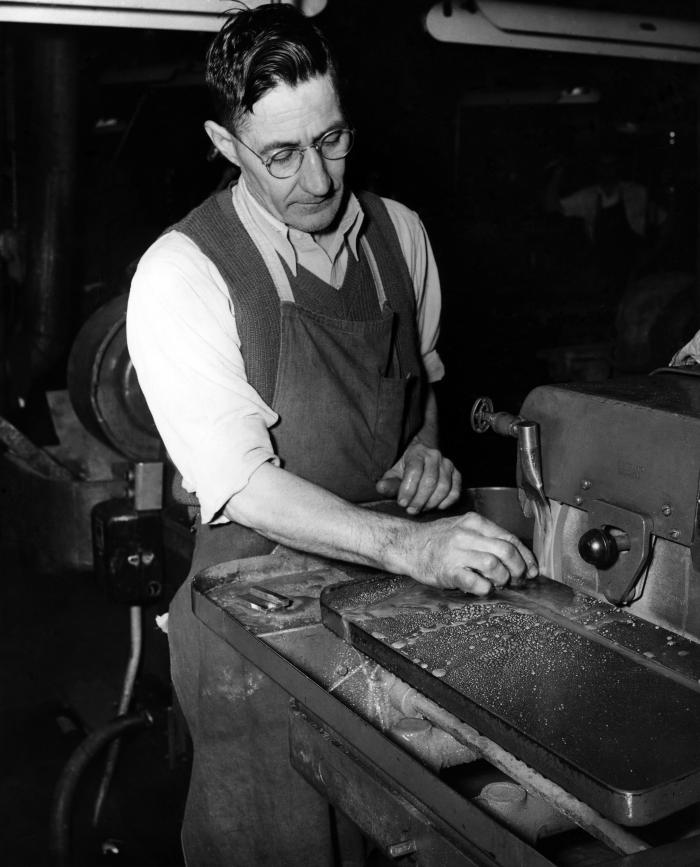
This 1946 historical photograph was provided by the Center for Disease Control's (CDC), National Institute for Occupational Safety and Health (NIOSH). It depicted a worker at a Carboloy� plant. Carboloy� is an alloy created by combining tungsten with cobalt or nickel and carbon. The alloy is extremely hard, harder than steel, and is used to cut steel, porcelain, quartz and other brittle materials. He was using cutting oil on grinding machinery. In the 1940s, the Industrial Hygiene Division (IHD) investigated hazards associated with the manufacture, and use of Carboloy�. The potential worker health problems associated with industrial metal grinding include respiratory and dermatologic hazards from inhalation and contact with fungi- and bacteria-contaminated synthetic metal-working fluids, oil mists, and grinding dust in the machining areas.